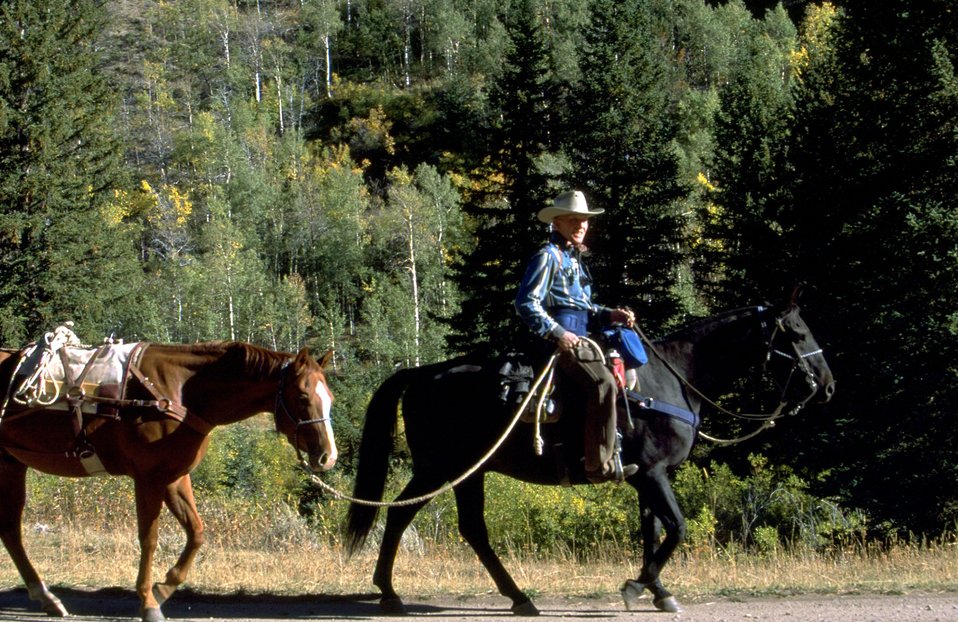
Horse back rider leading pack stock - Aspen trees in the background